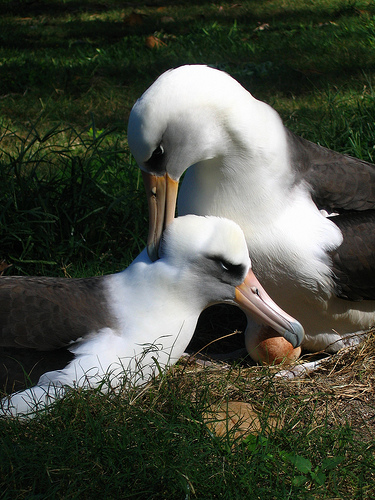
Photo of the Week: Nesting Laysan Albatrosse, Midway Atoll NWR

A pair of Laysan Albatrosses work together to protect their eggs.